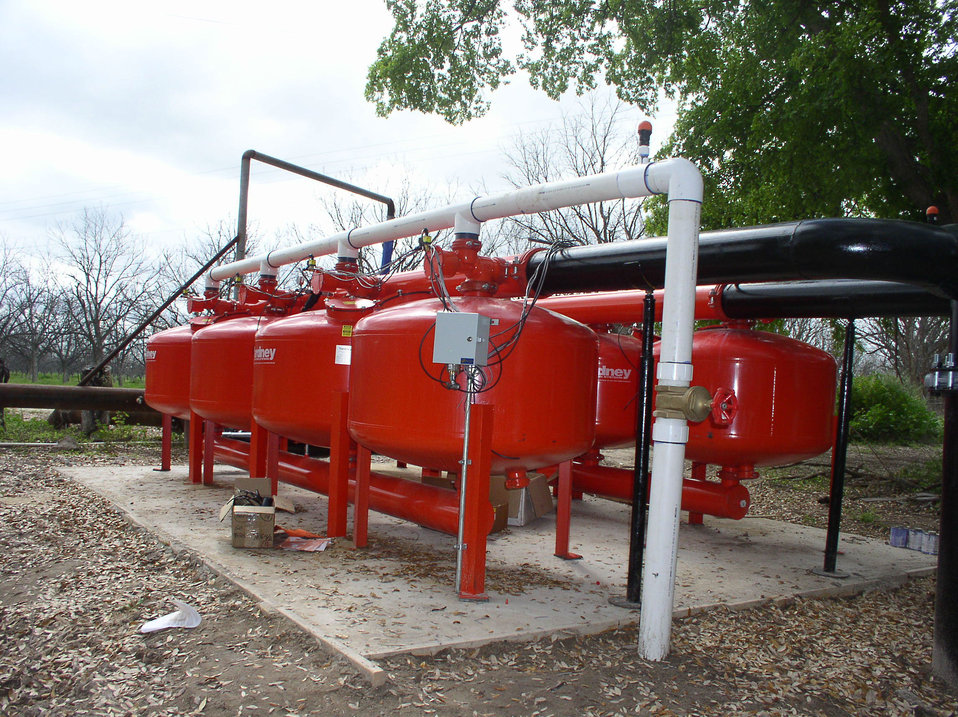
Arrowhead Farms of Zavala County, TX, now draws water from either the Nueces River (on other side of nearby trees) or deep water wells (brown pipes), either of which are filtered through sand tanks and pumped to the tree roots on Tuesday, April 6, 2010. Sediment free water is essential because, it will flow through various automated pressure and flow control valves, pipes, tubing and finally out emitters that drip water out of tiny holes at a rate of 1 gallon/hr. Each tree has several emitters under its drip line and over a typical 24 hour watering period will get just the right amount of water to survive Texas temperatures as best as possible. The farm has been owned by Mr. Akram Mohammad, a pecan farmer since 2005. The 719-acre farm with 10,000 trees, features some orchards with underground micro irrigation system that feeds water to the roots of 4,380 pecan trees on 146 acres. Mr. Mohammad said, “USDA (U.S. Department of Agriculture) was essential to my business and trees surviving the recent exceptional drought. The trees were stress free thanks to underground micro-irrigation. This is essential to the future growth of Texas agriculture and good for America.” U.S. Department of Agriculture’s (USDA) Environmental Quality Initiative Program (EQIP) awarded Mr. Mohammad a $130,000 grant in 2008. He provided $26,000 for the balance of the $156,000 total cost to install a 146-acre underground micro-irrigation for 4,380 trees.